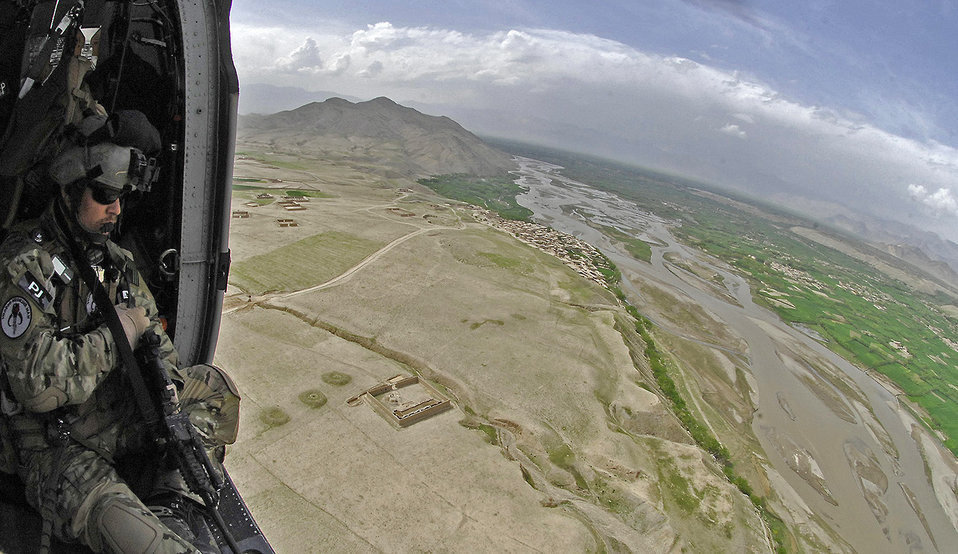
New York Guardsmen stay on alert to save lives

Tech. Sgt. Jedediah Smith surveys the landscape for threats during a training mission over Northeastern Afghanistan April 20. Sergeant Smith is a 101st Expeditionary Rescue Squadron pararescueman.